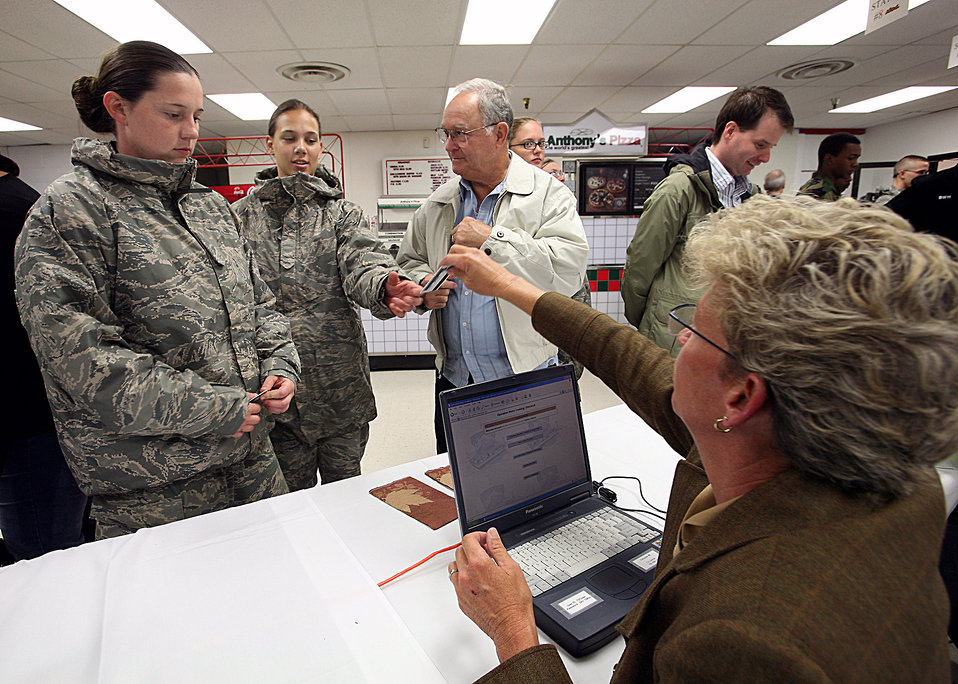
San Antonio families can share Thanksgiving with AF trainees

Nancy Conley checks the identification card of Trainee Rachel Cirell before Glen Johnson, a repeat adopter during Operation Homecooking, can take Trainees Cirell and Britany Williamson home for Thanksgiving dinner last year. This year, about 4,000 trainees are eligible to participate in Operation Homecooking. Last year, more than 1,400 local families hosted more than 2,400 Airmen for Thanksgiving dinner. Mr. Johnson has hosted trainees for 15 years.